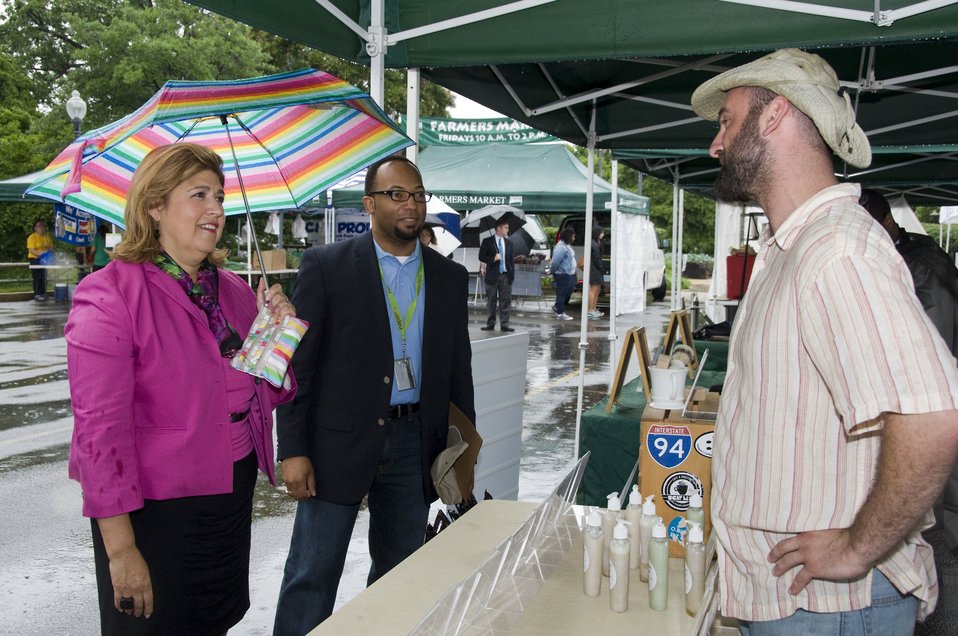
Soaps at the USDA Farmers Market

AMS Administrator Anne Alonzo and AMS Deputy Administrator Arthur Neal talk with vendors before the market opens.